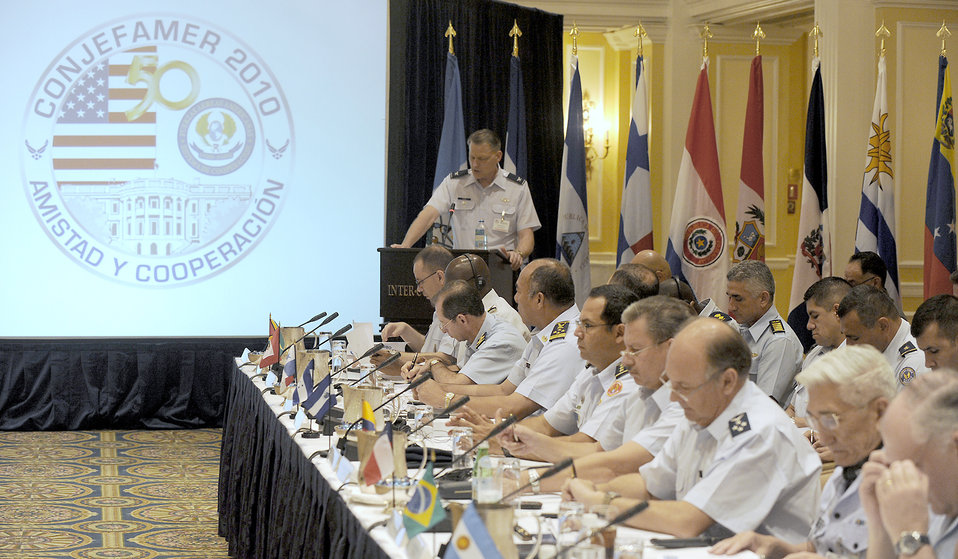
CONJEFAMER

Col. Royce Eves addresses attendees of